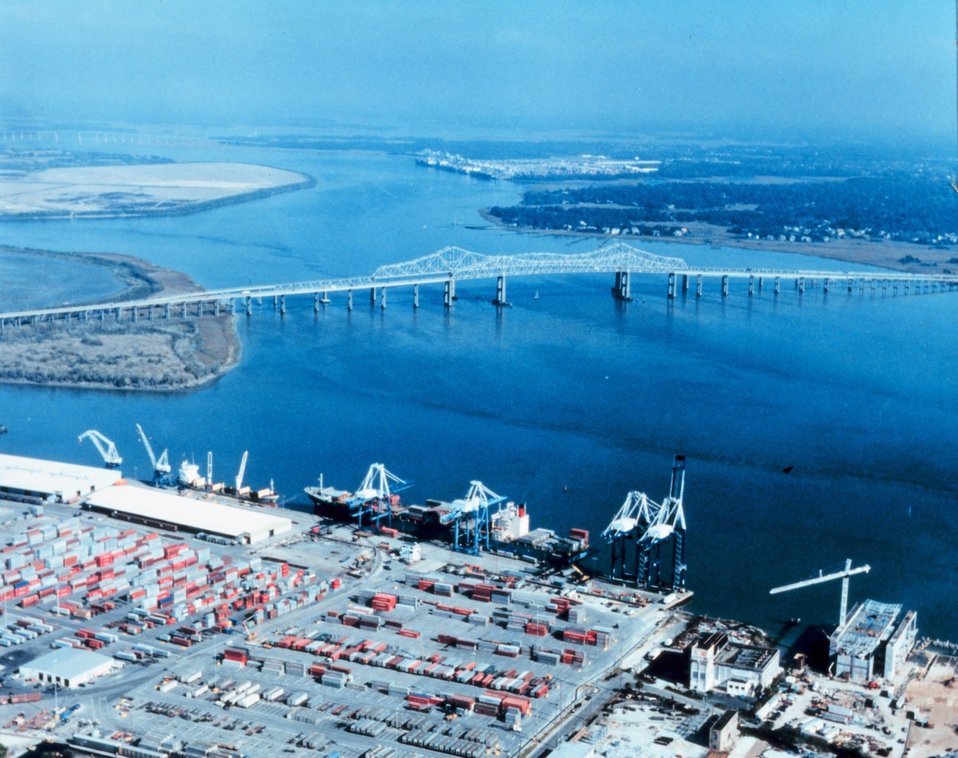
3246 North Latitude 7955 West Longitude.